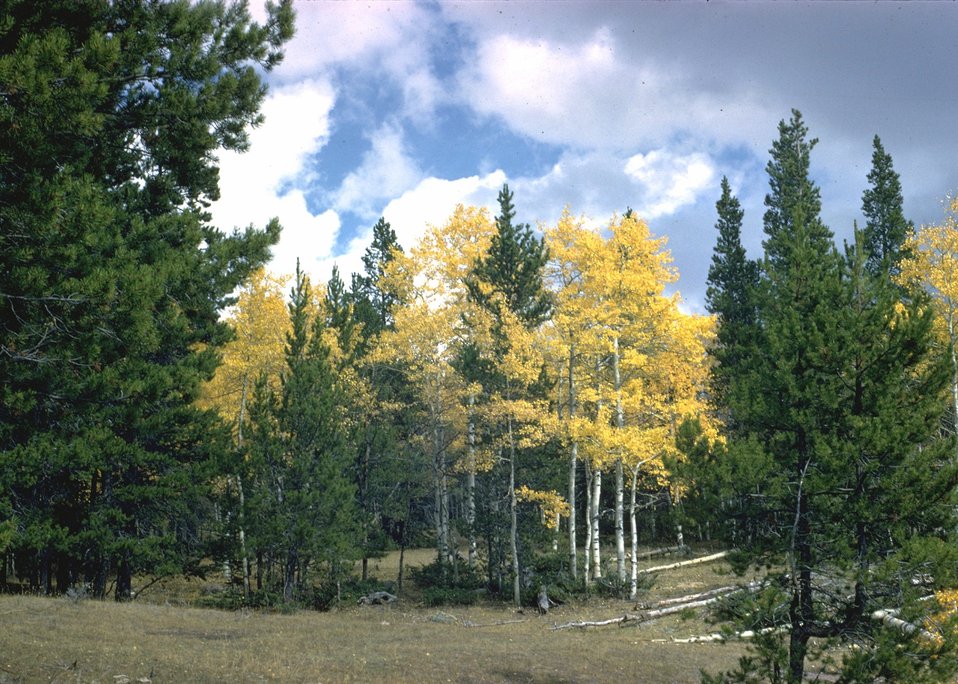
The Aspen, is a decidous tree, loosing it's leaves each fall.